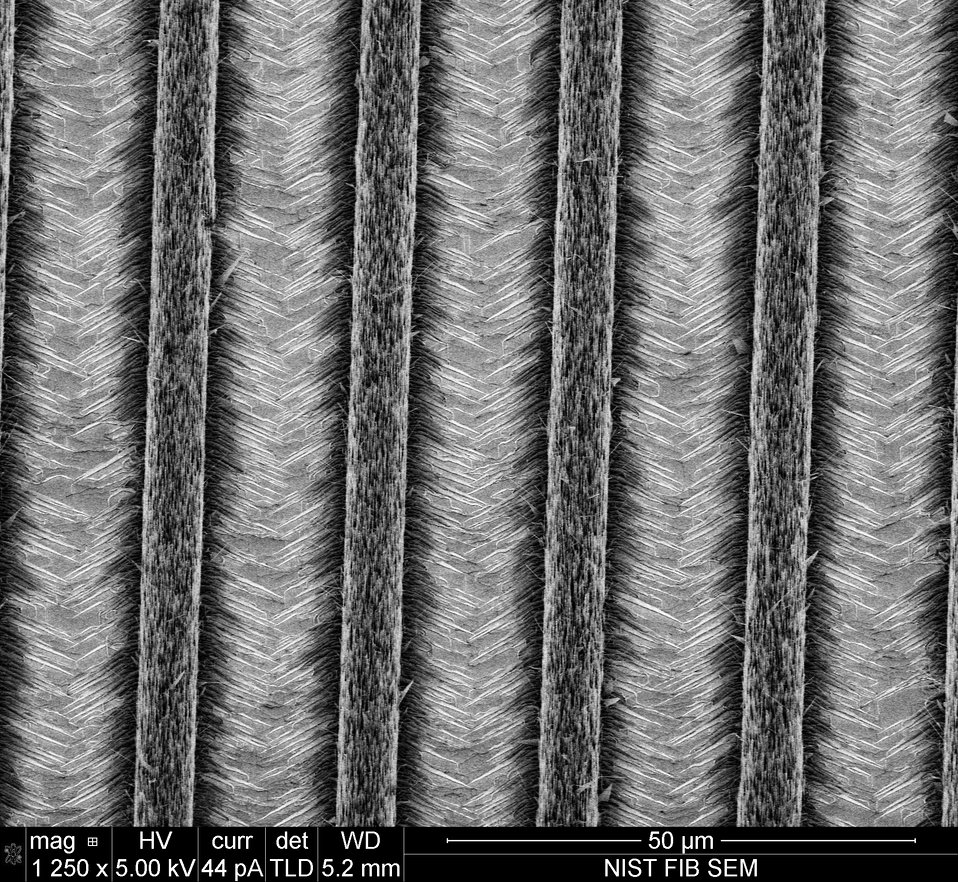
Nanowires

The scanning electron microscope image shows four rows of nanowires and their corresponding nanowalls, nicknamed 'nano LEDs' because they emit light when electrically charged. The distance across the micrograph is approximately the diameter of a human hair.